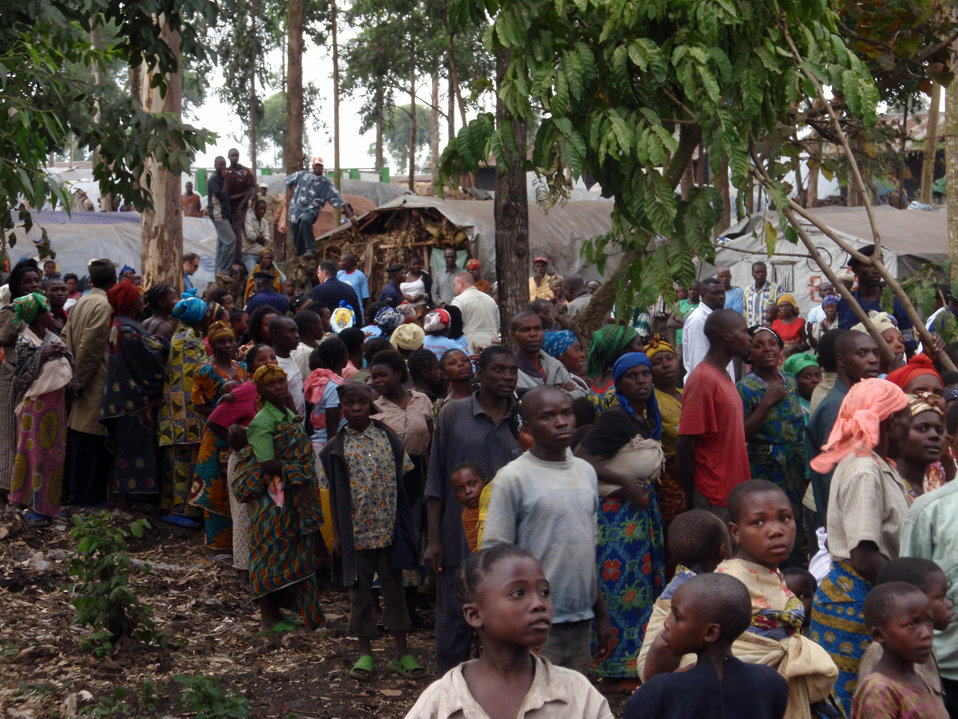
Behind the Scenes: Mugunga IDP Camp

The scene during the arrival of U.S. Secretary of State Hillary Rodham Clinton at the Mugunga Internally Displaced Person (IDP) Camp in Goma, Democratic Republic of Congo August 11, 2009.